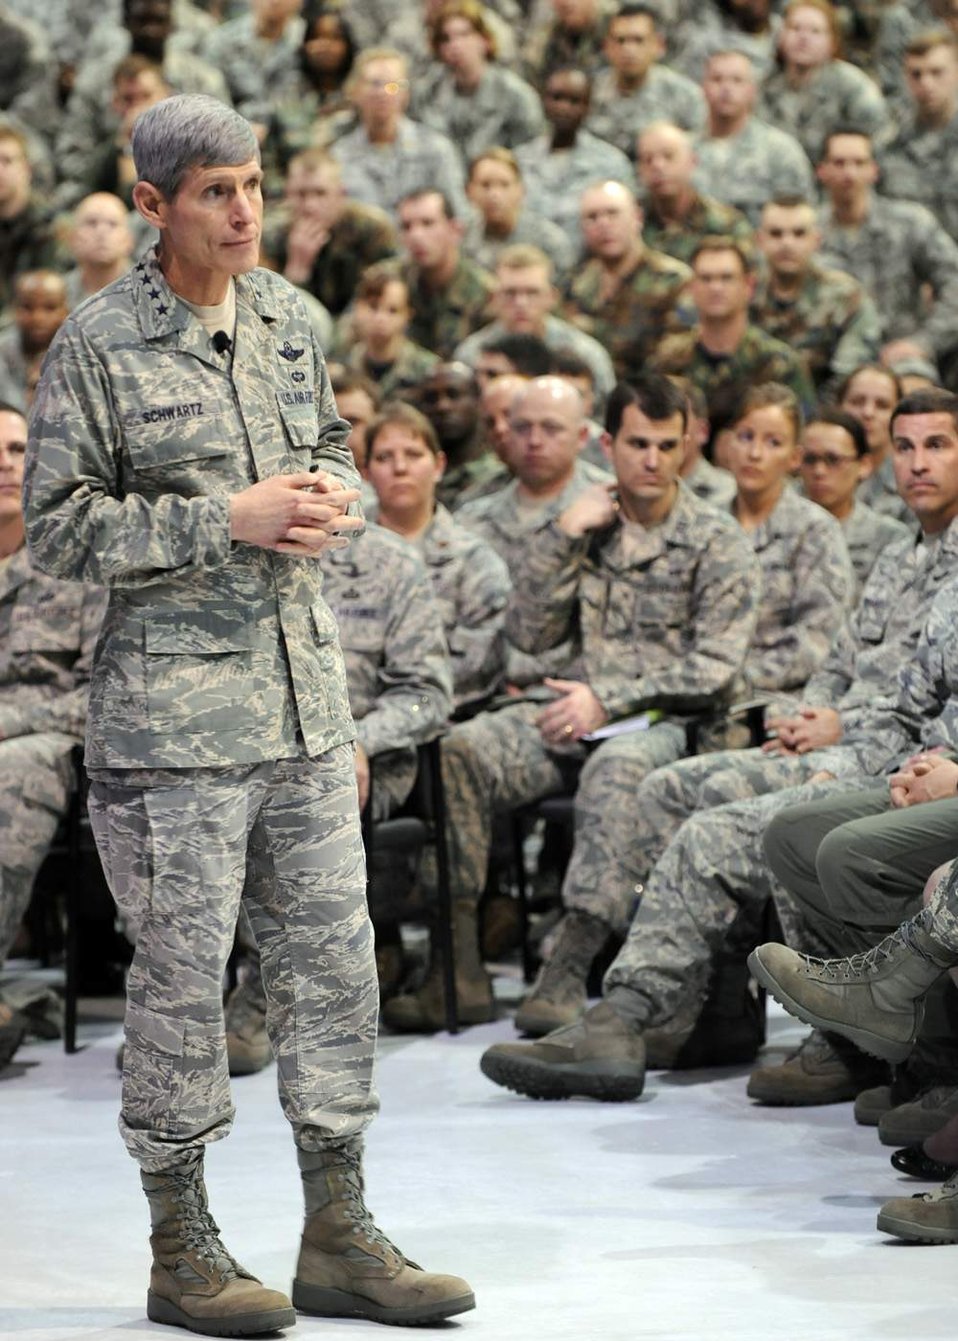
Gen. Schwartz to Airmen: 'We are a family'

General Norton Schwartz addresses personnel during an Airmen's Call March 11 at Langley Air Force Base, Va. General Schwartz, the Air Force chief of staff, reviewed Langley AFB's warfighting capabilities, viewed an F-22 demonstration during his visit.